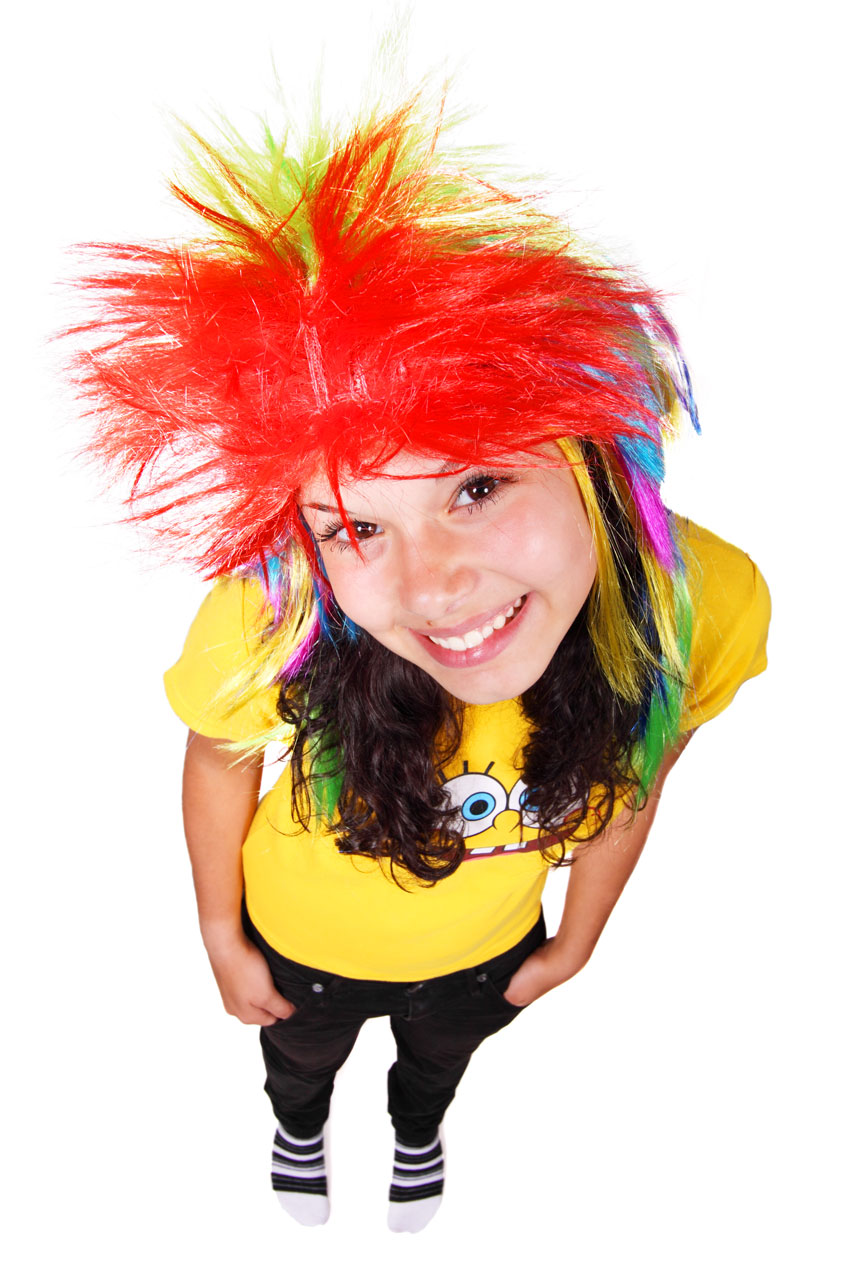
Crazy hair

Young woman with crazy hair style.